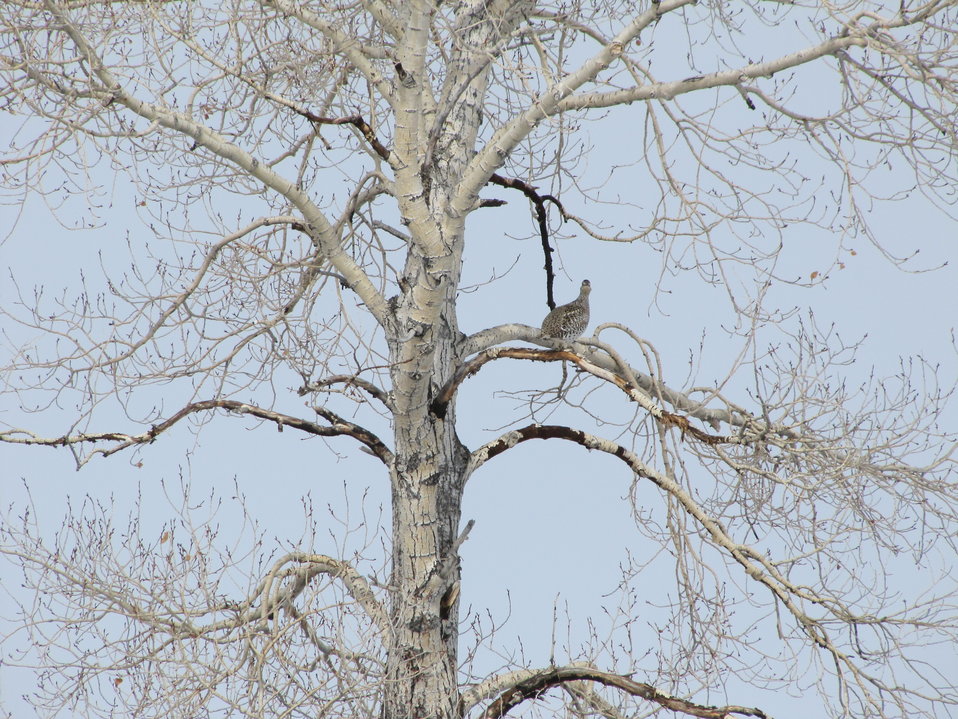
Sharp-tailed Grouse in Tree

A sharp-tailed grouse was spotted in a tree on the National Elk Refuge by a refuge staff member in February 2010. Over the past few years, more sharp-tailed grouse have been returning to the Jackson Hole valley after being absent for more than 50 years.